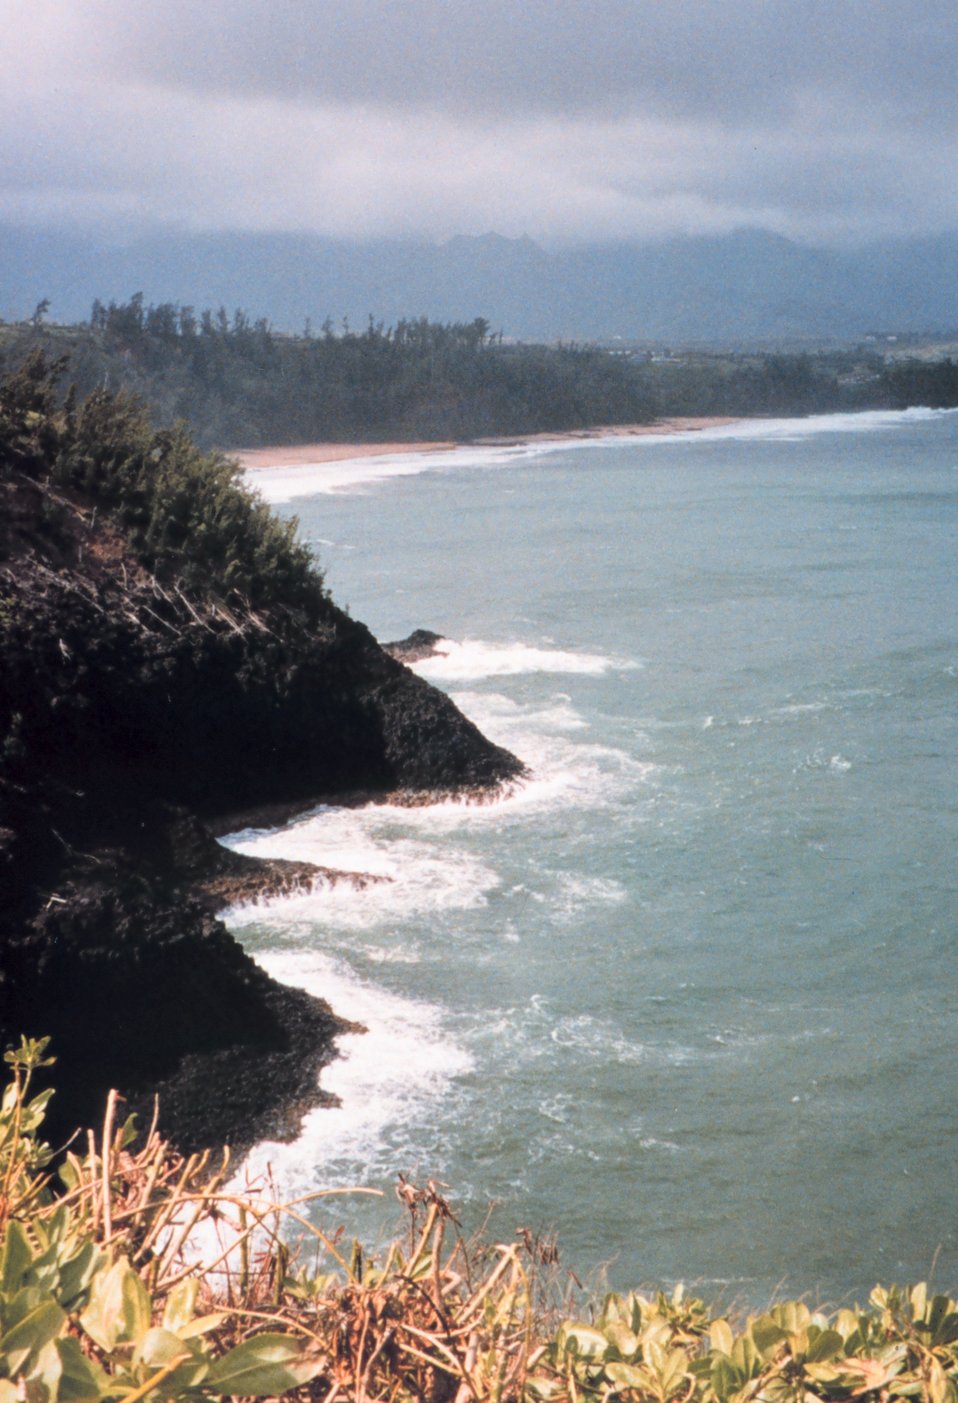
Western coast of Kauai close to Barking Sands